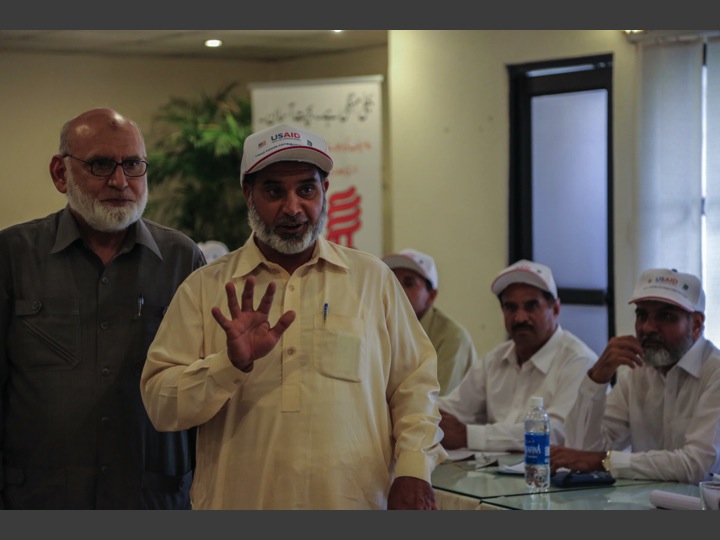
Linemen describing his experience about the training